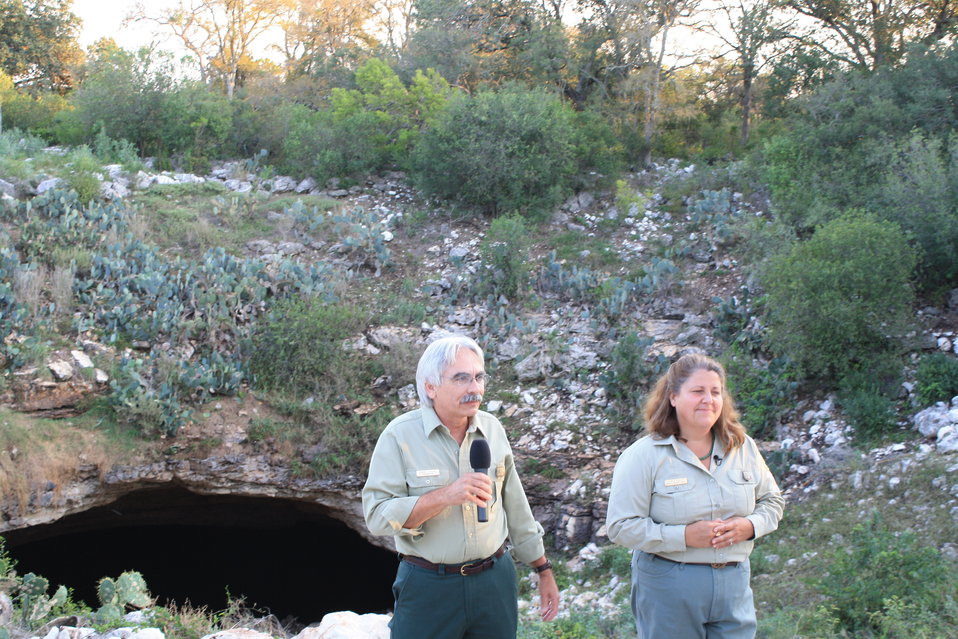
US Forest Service staff during broadcast

US Forest Service staff Dennis Krusac and Sandy Frost during BatsLIVE broadcast